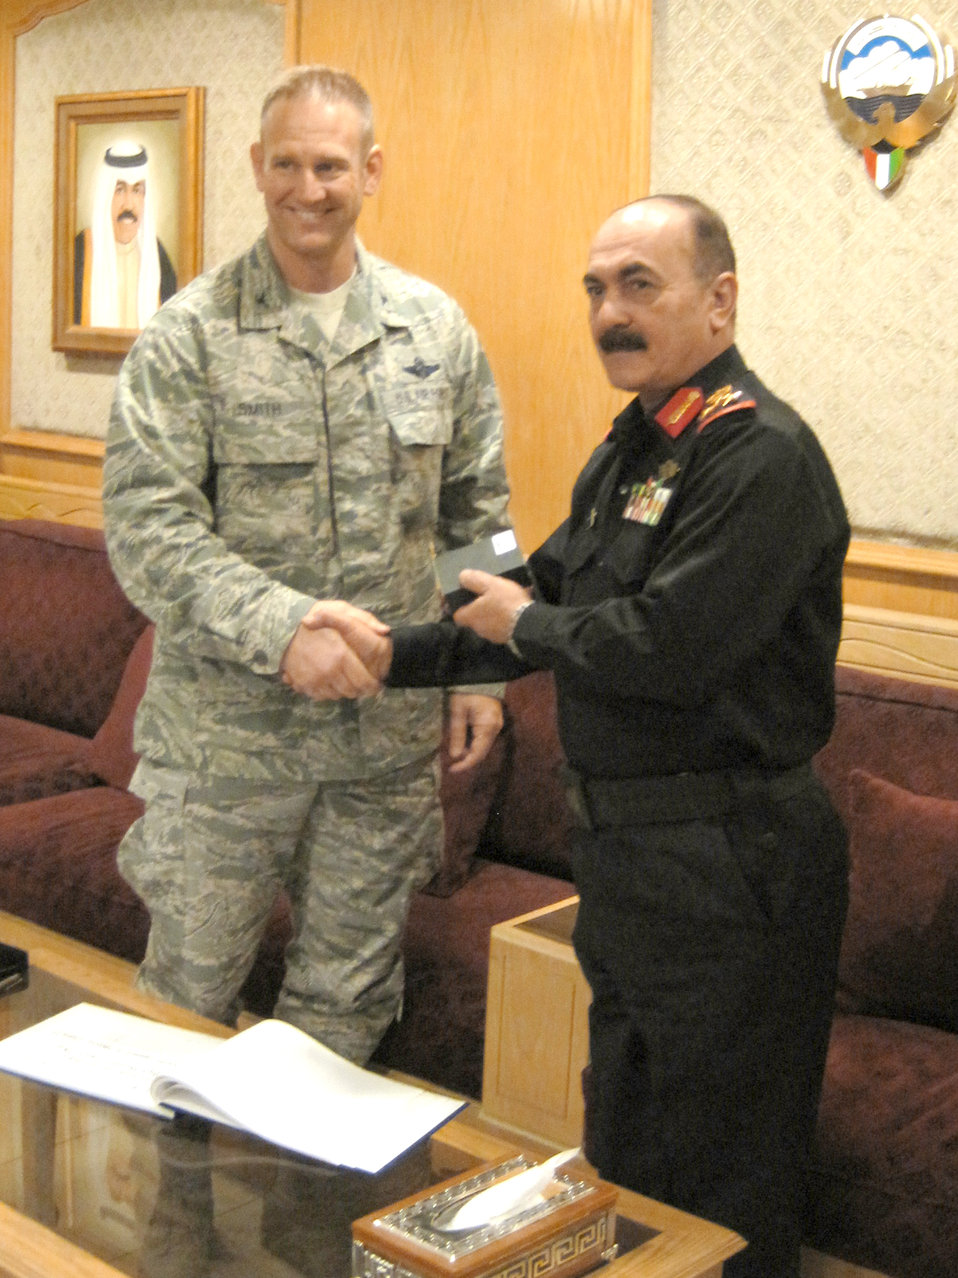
Officers brief students

Col. Dirk Smith and Kuwaiti Brig. Gen. Nasser Al Hussainan shake hands after General Hussainan presented a token of appreciation to the U.S. Air Forces Central officials for delivering presentations on current and emerging ideas from the air operations component, on various military topics. Colonel Smith is the 609th Air Operations Center commander. General Hussainan is the director of studies at Mubarak Al Abdullah Joint Command and Staff College, Kuwait.